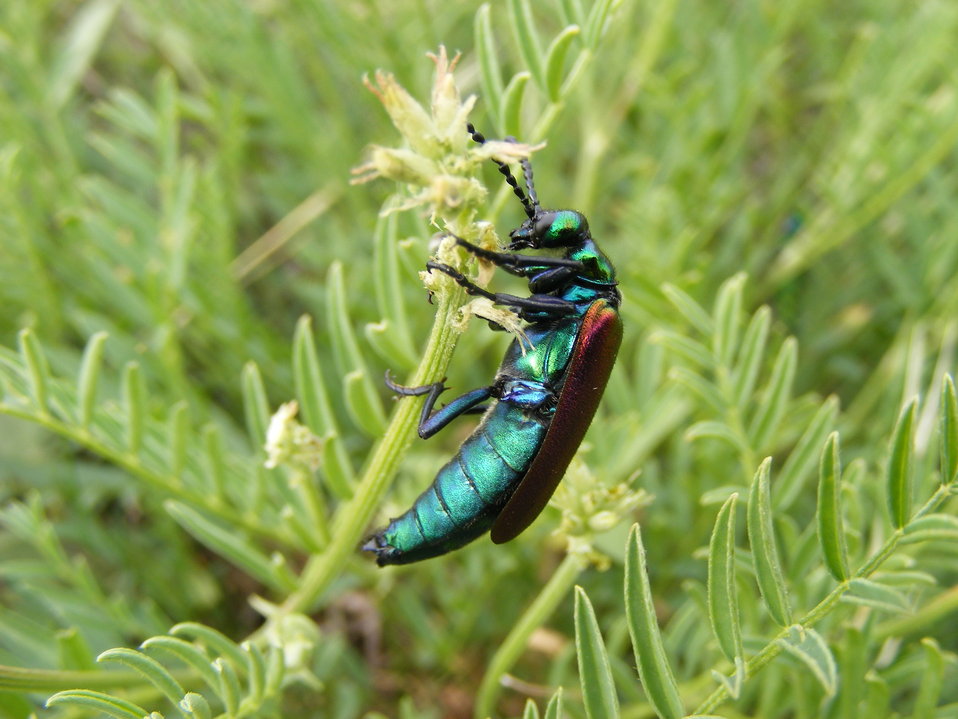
Cool Critter

The bright colors of the Nutall's blister beetle make it easy to spot in native prairie. A group of them were eating the flowers off milkvetch plants when this photo was taken. Blister beetles will release a skin irritant if squeezed. Photo was taken at a Waterfowl Production Area in Waubay Wetland Management District in SD.